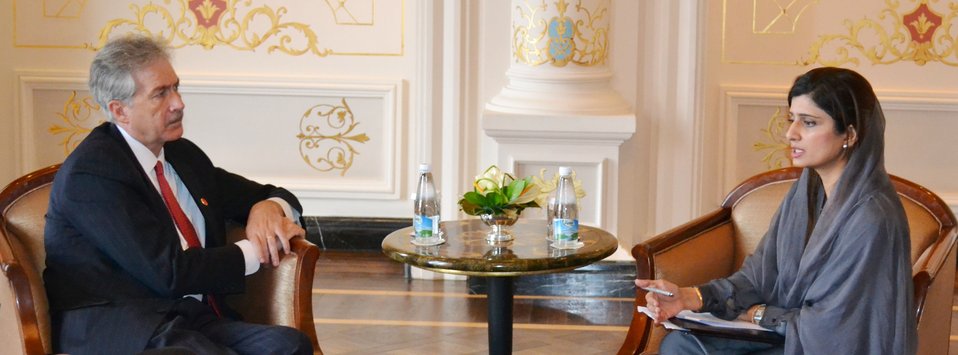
Deputy Secretary Burns Meets With Pakistani Foreign Affairs Minister Hina Rabbani Khar

U.S. Deputy Secretary of State William J. Burns meets with Pakistani Foreign Affairs Minister Hina Rabbani Khar during the Istanbul Conference for Afghanistan at the Ciragan Palace in Istanbul, Turkey, on November 1, 2011.